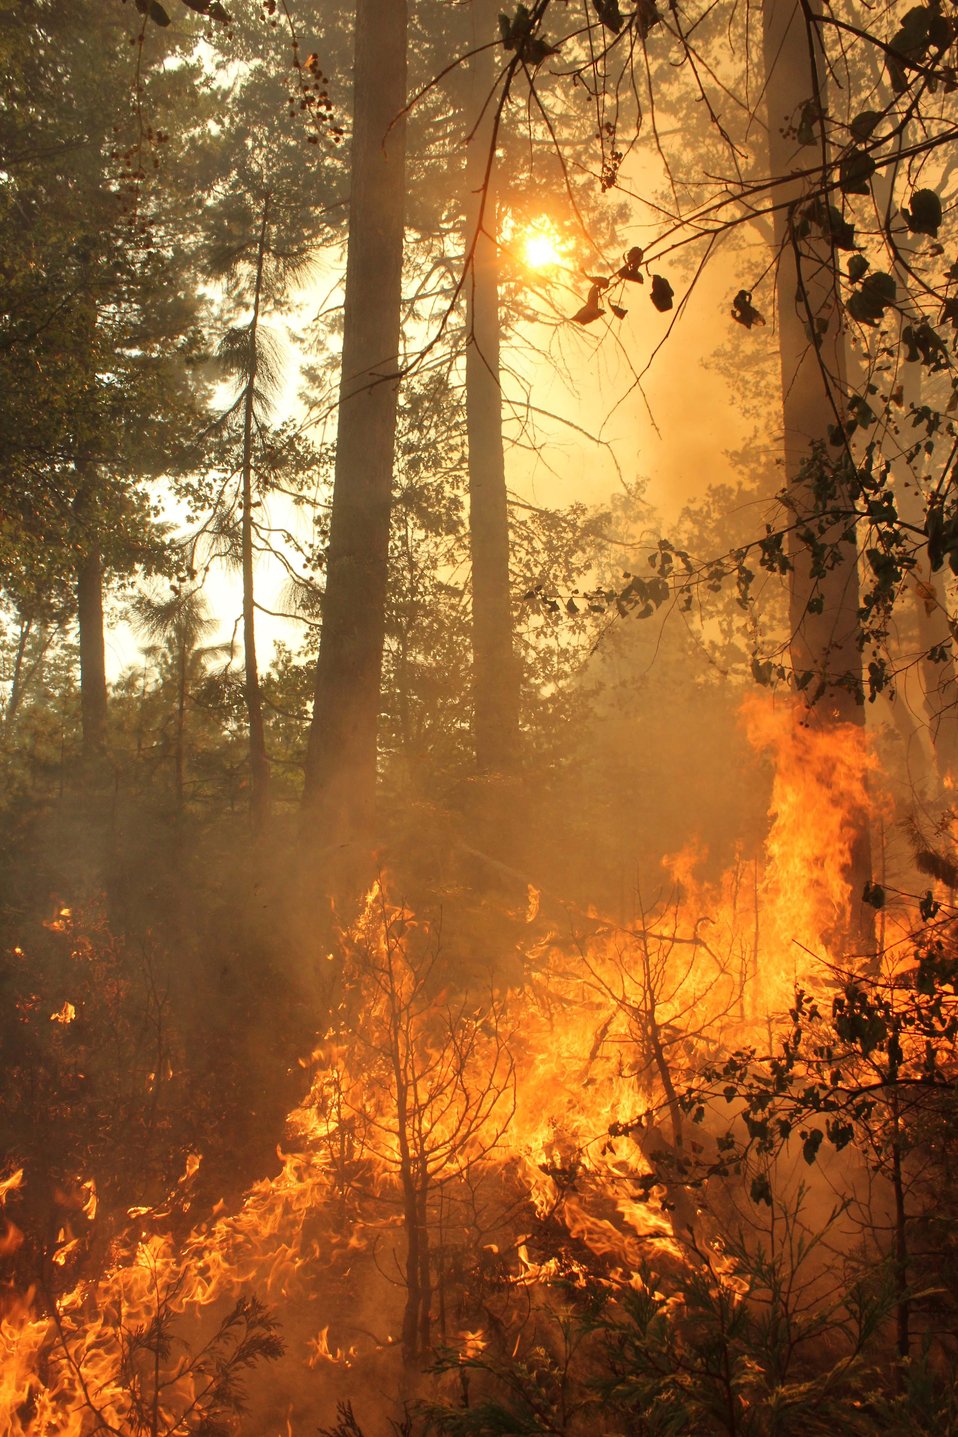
The Rim Fire in the Stanislaus National Forest near in California began on Aug. 17, 2013 and is under investigation. The fire has consumed approximately 235,841 acres and is 70% contained.